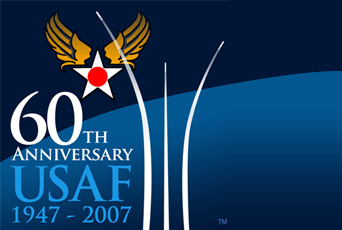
USAF 60th Anniversary 1947-2007

Heritage to Horizons...
Commemorating 60 years of Air and Space Power